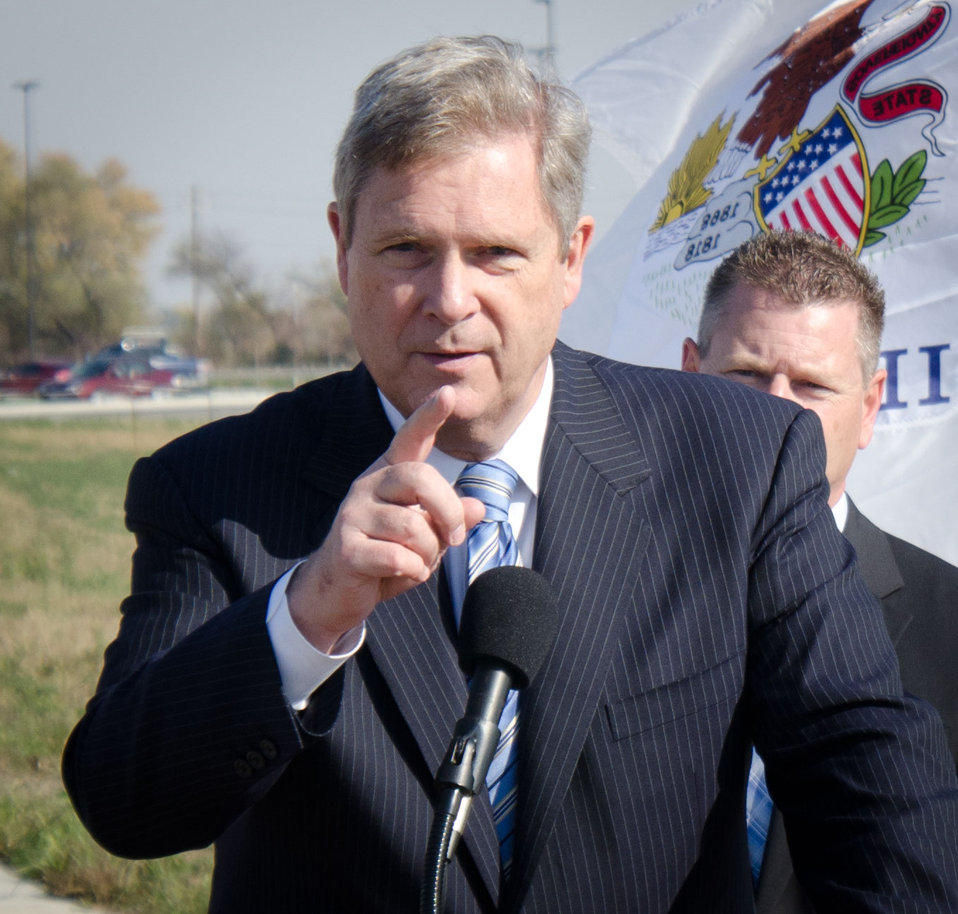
U.S. Department of Agriculture Secretary Tom Vilsack, visited a recently completed transportation project that extended the existing MacArthur Boulevard and new interchange with Interstate 72, that brought new businesses and 500 new jobs to Springfield, IL on November 2, 2011. Agriculture Secretary Tom Vilsack spoke in front of a harvested farm field at the interchange The Administration's strategy to strengthen the U.S. economy and to highlight what passage of the American Jobs Act will mean for Illinois. 'The American Jobs Act provides common-sense steps we can take right now to put more people back to work and put more money in the pockets of working Americans, without adding a dime to the deficit,' said Secretary Vilsack. 'In Illinois, this Act will provide a tax cut for over 260,000 businesses, support the jobs of 14,500 teachers and first responders and immediately provide a job for over 20,700 construction workers through infrastructure improvements. A typical household in Illinois will receive a tax cut of around $1,640.'